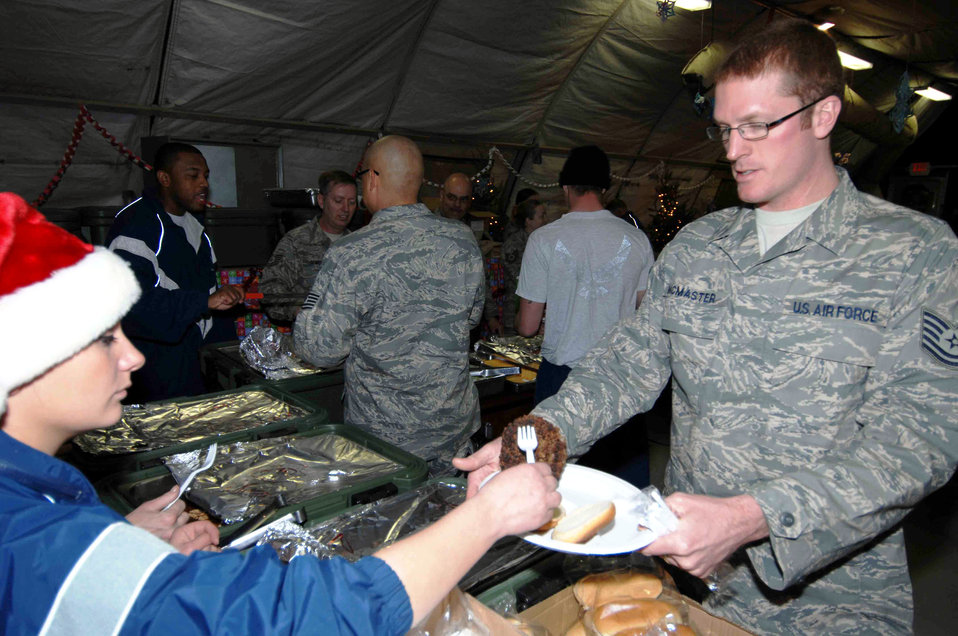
Bagram Airmen celebrate season

Tech. Sgt. Ryan McMaster is served a holiday meal during a celebration co-sponsored by the 455th Expeditionary Mission Support Squadron, private organizations and volunteers Dec. 23 at Bagram Air Base, Afghanistan. Sergeant McMaster is assigned to the 774th Expeditionary Airlift Squadron.